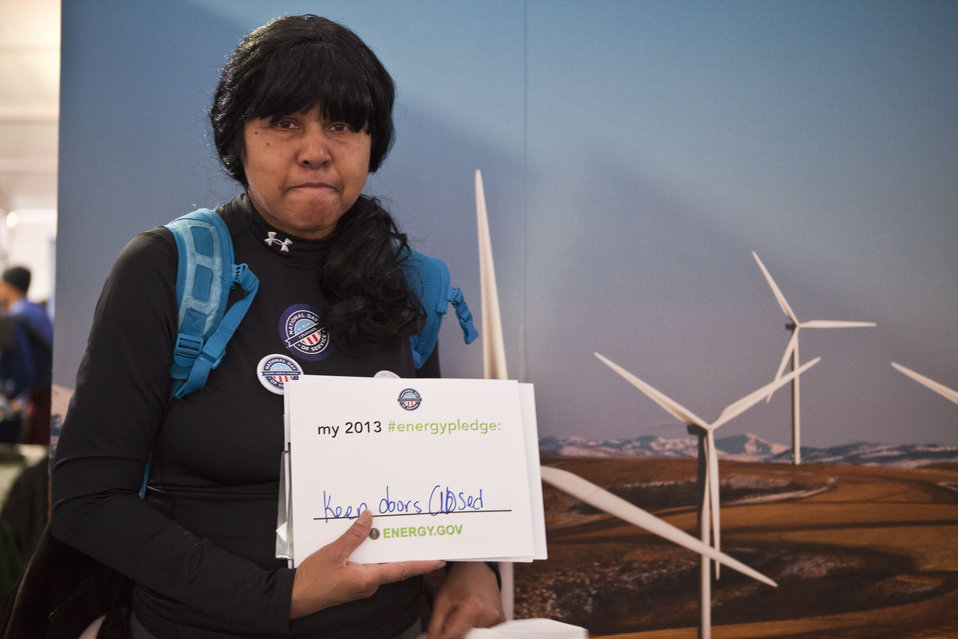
What's your #energypledge?